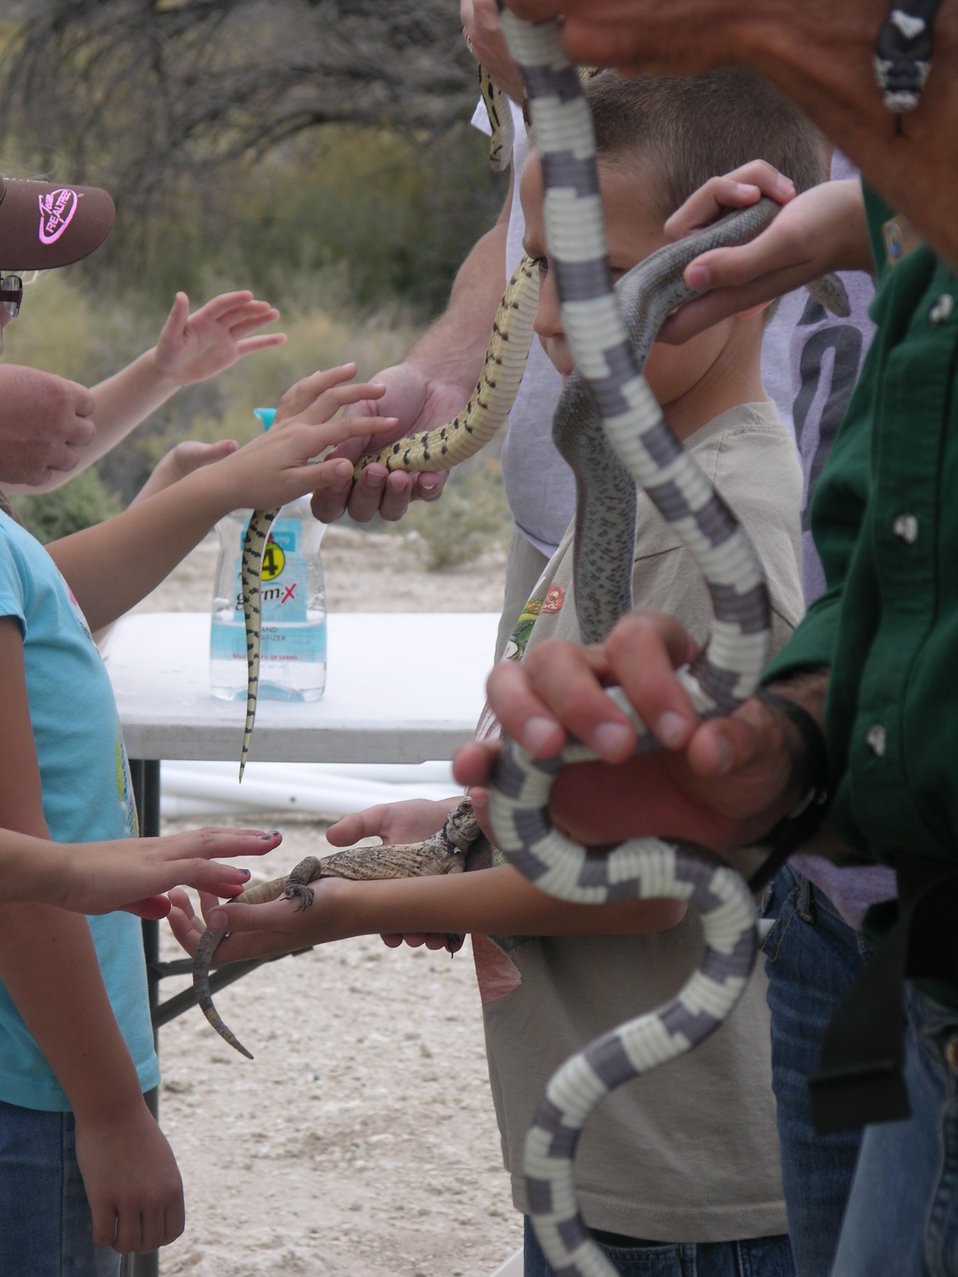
Exploring snakes & lizards

Kids learn about the many species of native reptiles in their area. Sharon McKelvey/USFWS